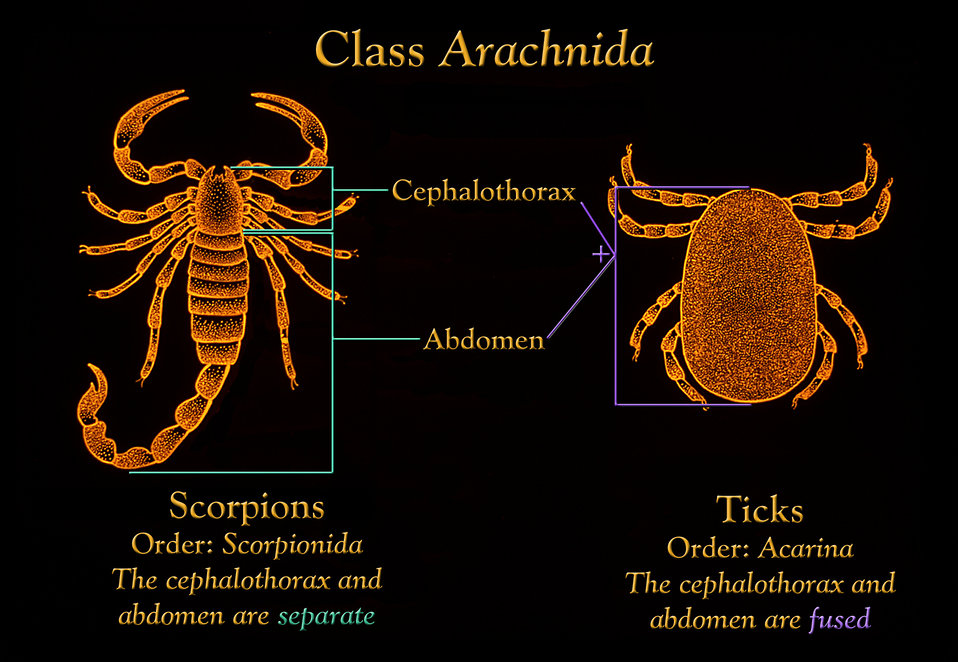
This drawing depicts differing anatomic features found in scorpions, Order Scorpionida, and ticks, Order Acarina.